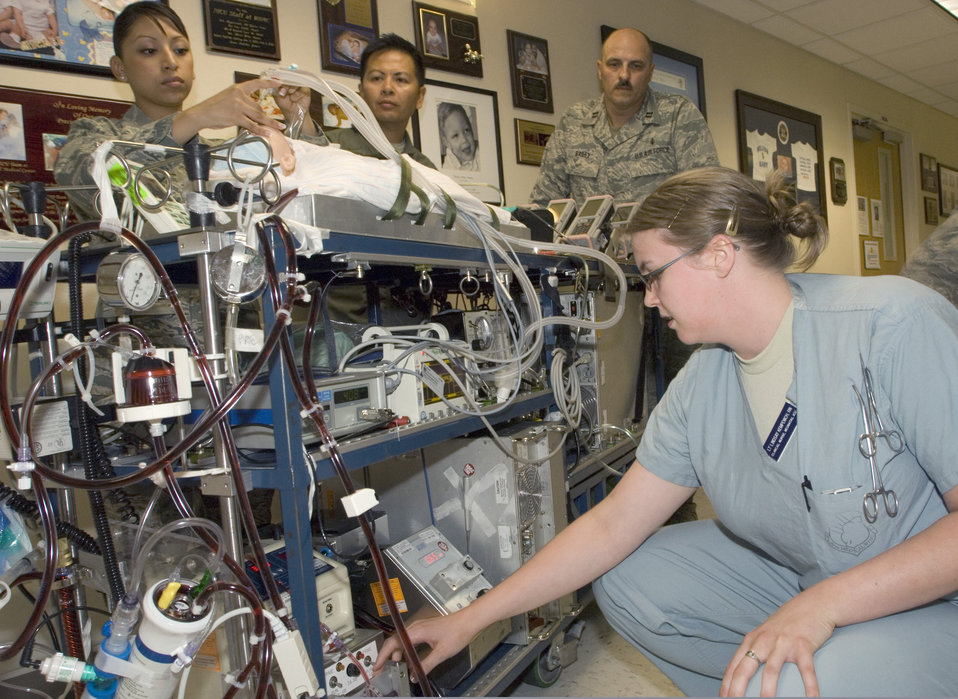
ECMO machine

Members of the 59th Medical Wing Extra-Corporeal Membrane Oxygenation clinical care support team inspect an ECMO machine during an exercise July 1, 2009, at Wilford Hall Medical Center, at Lackland Air Force Base, Texas. The ECMO machine is a heart-lung bypass device that circulates and oxygenates the blood, giving diseased or damaged lungs a chance to heal.